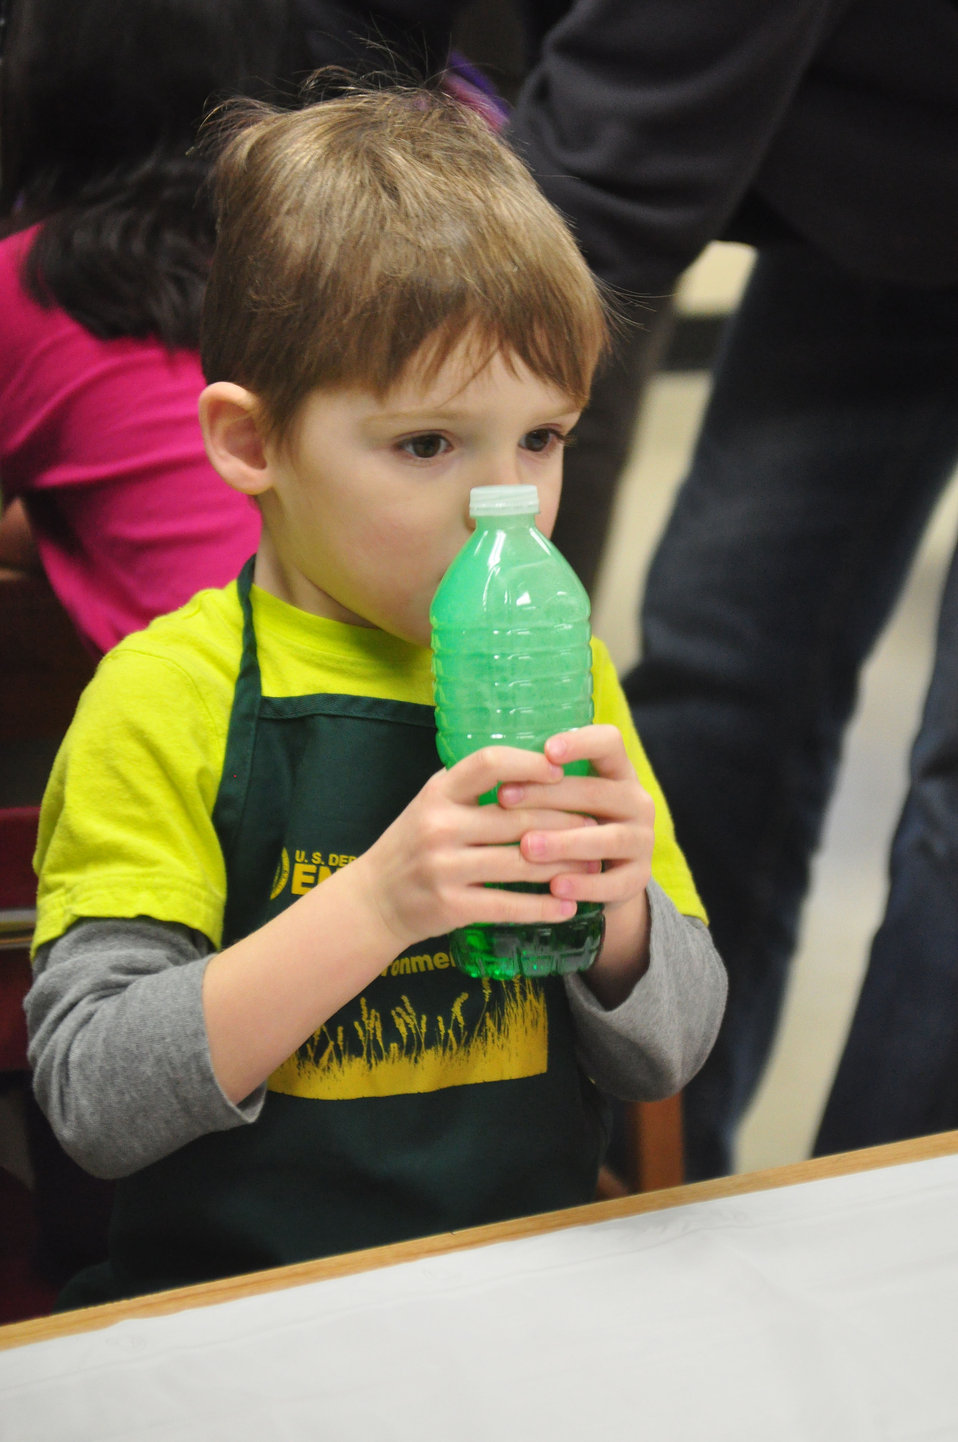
Woodland School STEM Night Oak Ridge 2014

14-013 DOE photo Lynn Freeny 1-23-2014 Oak Ridge Tennessee